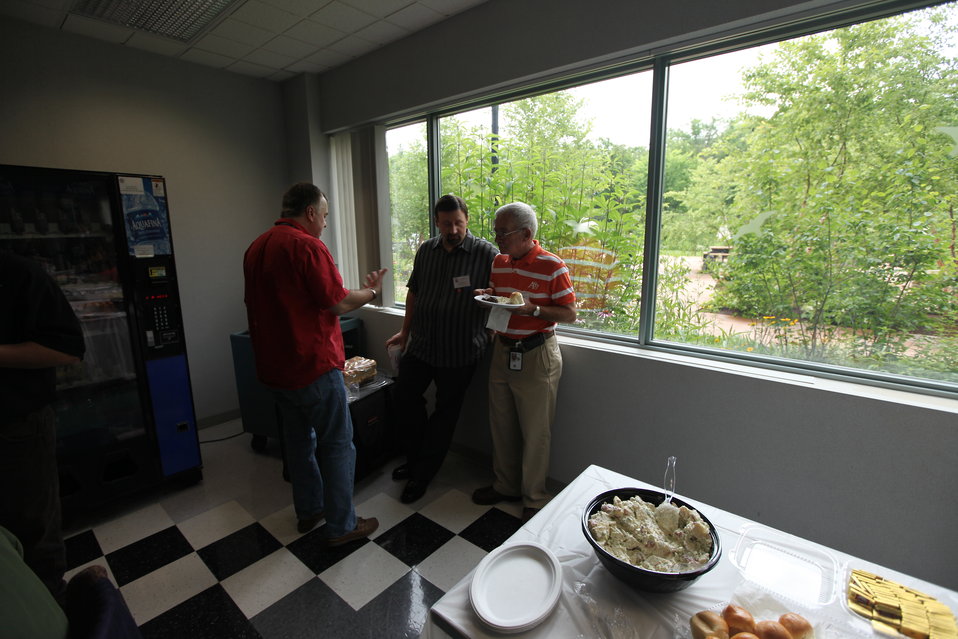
Northeast Region Employee Appreciation Awards

Award winners enjoying lunch before the awards